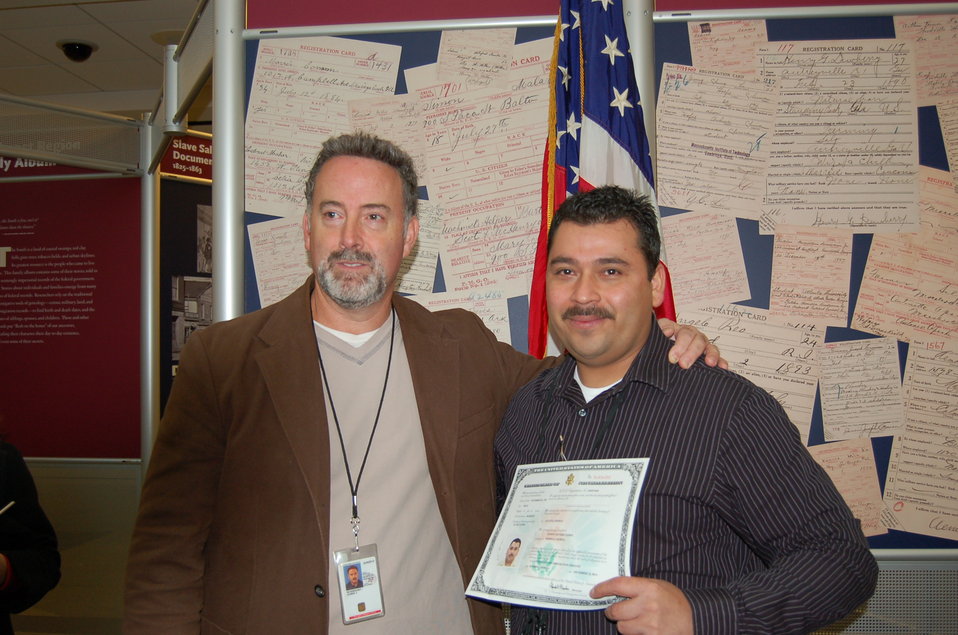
New Citizens